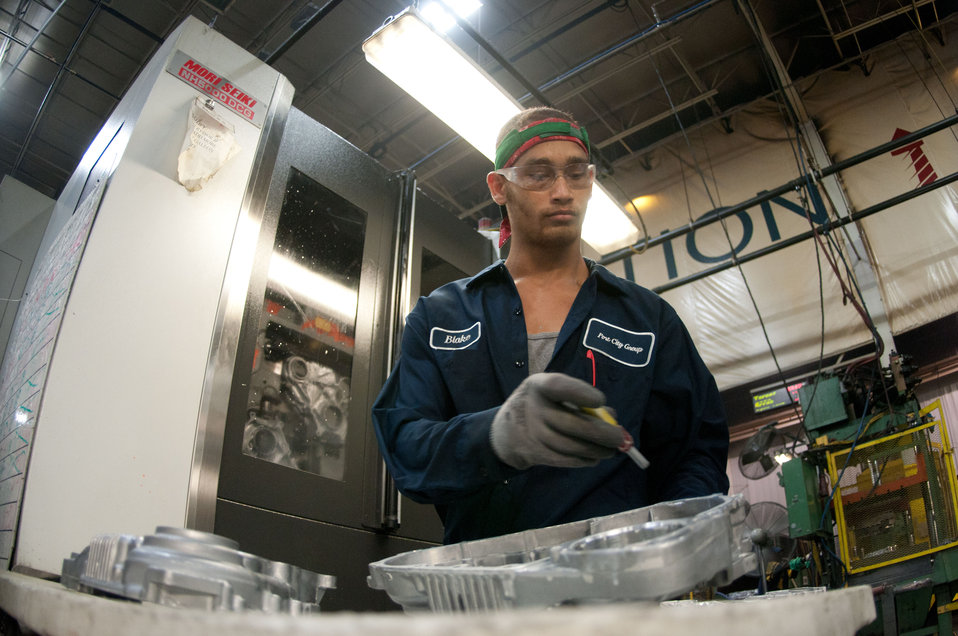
Computer Numerical Control (CNC) machine operator Blake Veeneman makes a inspects a casting at the Port City Group’s Port City Castings Corporation manufactures high-pressure aluminum die-castings, mostly for the automotive industry, in Muskegon, MI, facility on Wednesday July 20, 2011. Port City Group boosted its employment by 12 percent over last year thanks to two Rural Business Guaranteed Loans totaling $9.6 million. In its 80,000 sq. ft. facility, machines that range from 800 – 1,600 tons, and cast A380 aluminum alloy products from melted ingots of aluminum, into automotive components of U.S.A. made vehicles. The process features a variety of robotic presses; computer controlled machining; quality control facility; and complete measurement and testing laboratory. In 2009 banks were backing out of loans for PCG equipment purchase agreements. The U.S. Department of Agriculture (USDA) loan guarantee helped make the loan possible with its guarantee. PCG obtained the needed robotic and other equipment. This resulted in a stable workforce that has since grown. When asked about their USDA experience, Port City Group Sales Manager Laura LaGuire said, “It was great! They were very helpful. Everything that came up was handled smoothly, the money came in place when it was needed, and it was a very smooth transition.”